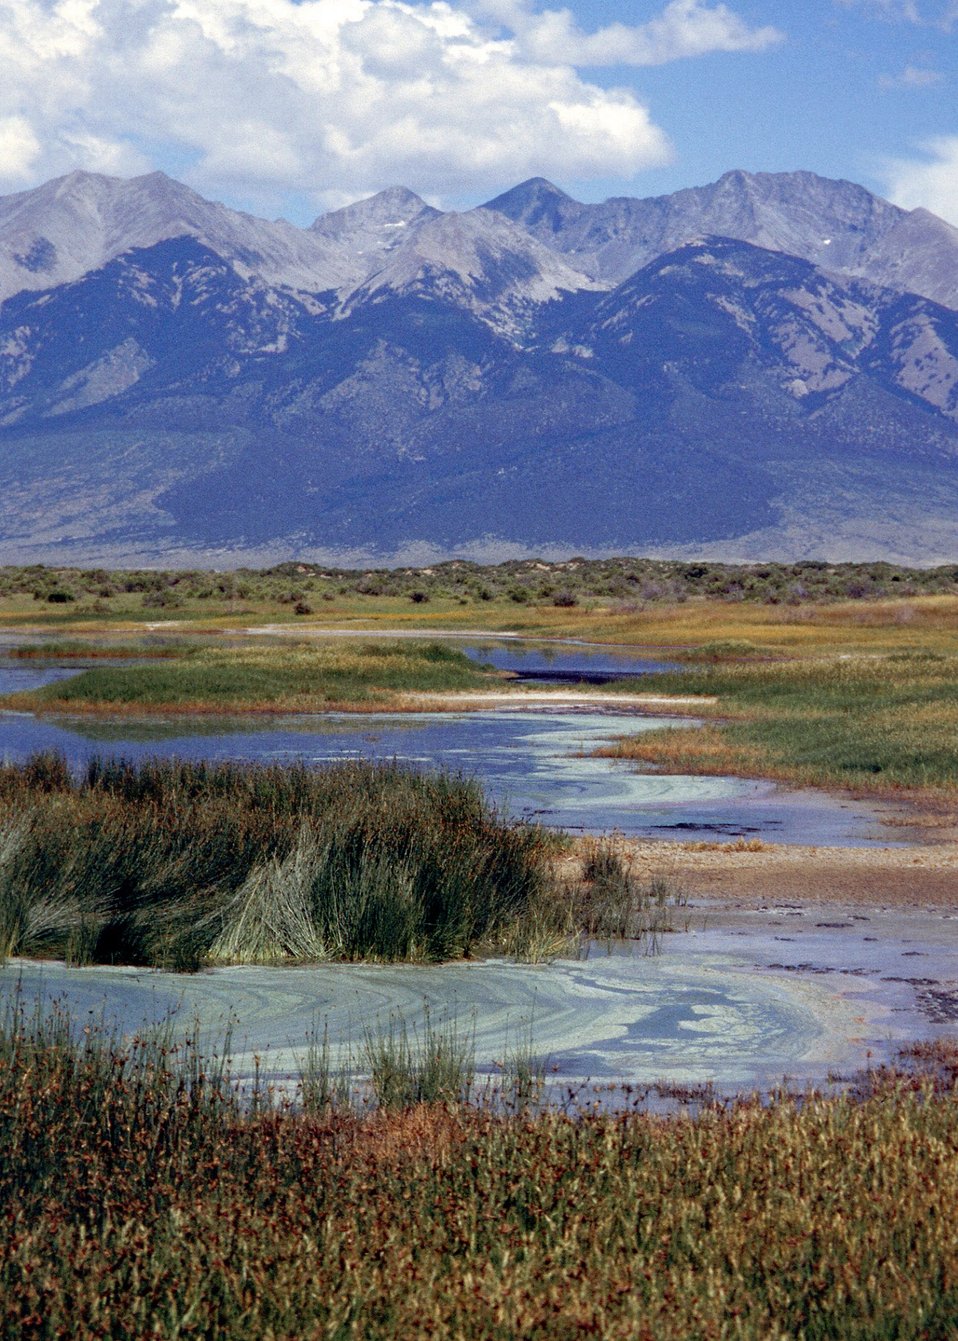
Blancco Wet Lands